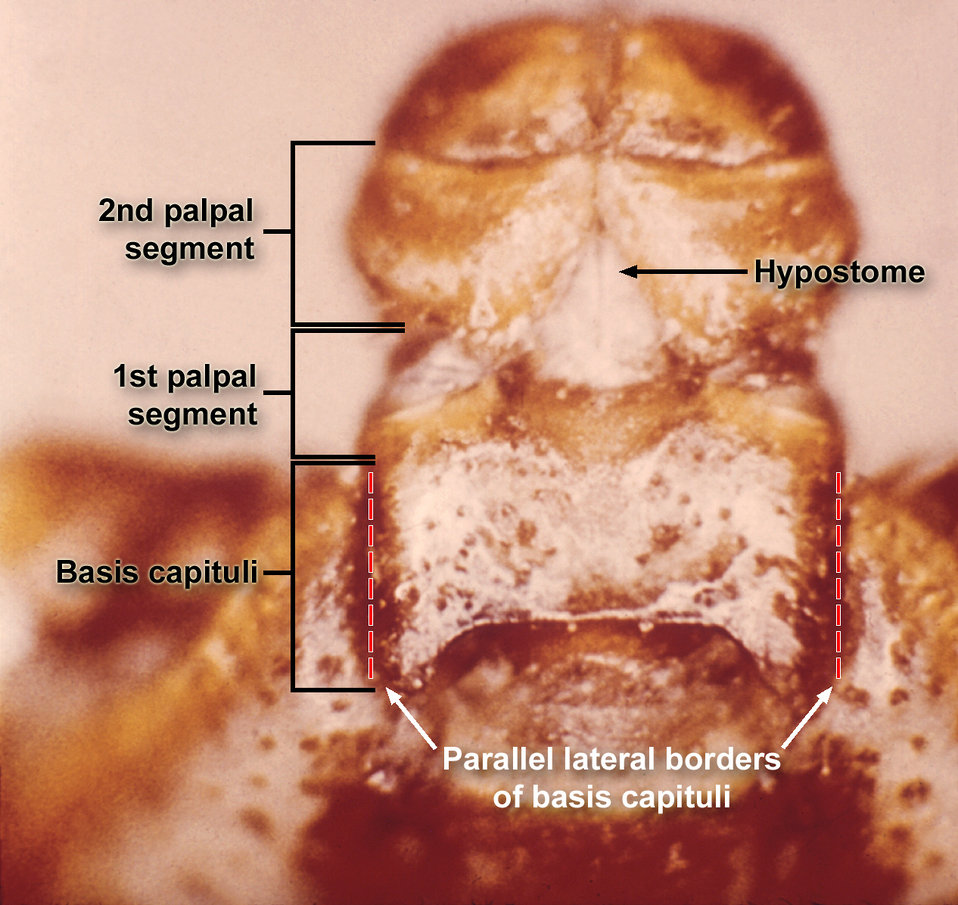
The basis capituli of this hard tick possess lateral borders that are parallel to one another.